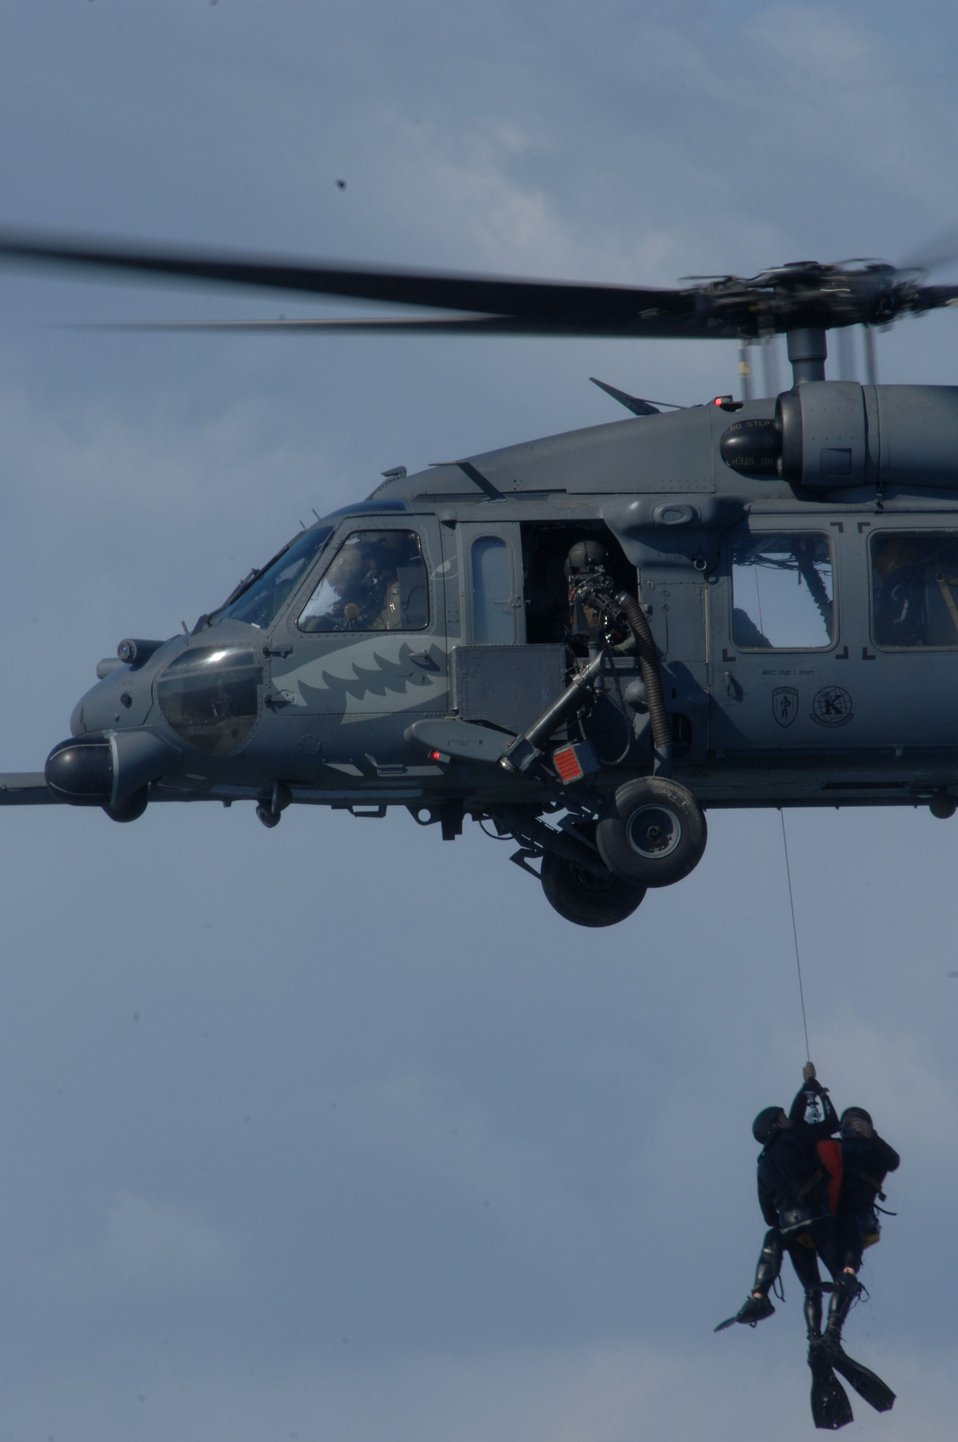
Commando Angel preps pararescuemen

Pararescuemen from the 38th Rescue Squadron are hoisted by an HH-60G Pave Hawk from the 41st RQS, during a dive recovery exercise March 22 in the Gulf of Mexico. The 38th and 41st RQS from Moody Air Force Base, Ga., are taking part in the base's operational readiness exercise, Commando Angel.